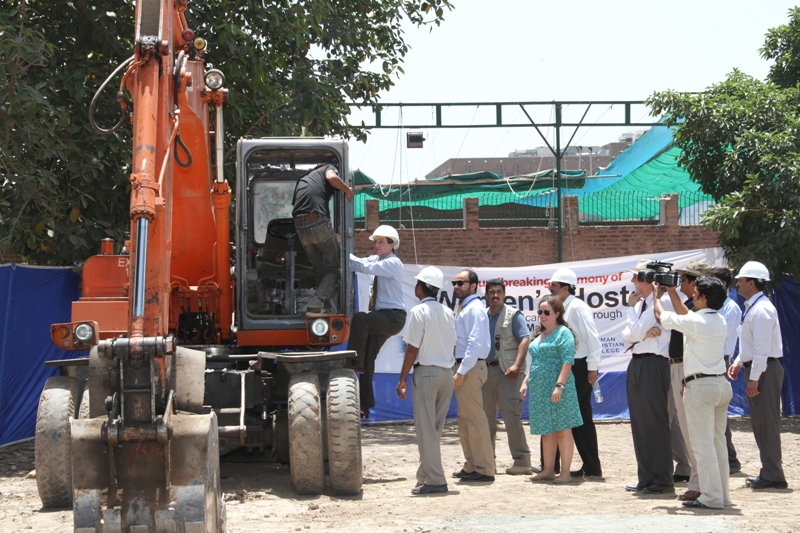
Dr. Andrew Sisson operated an excavator in breaking ground on this $6 million (543,600,000 Rs) construction project